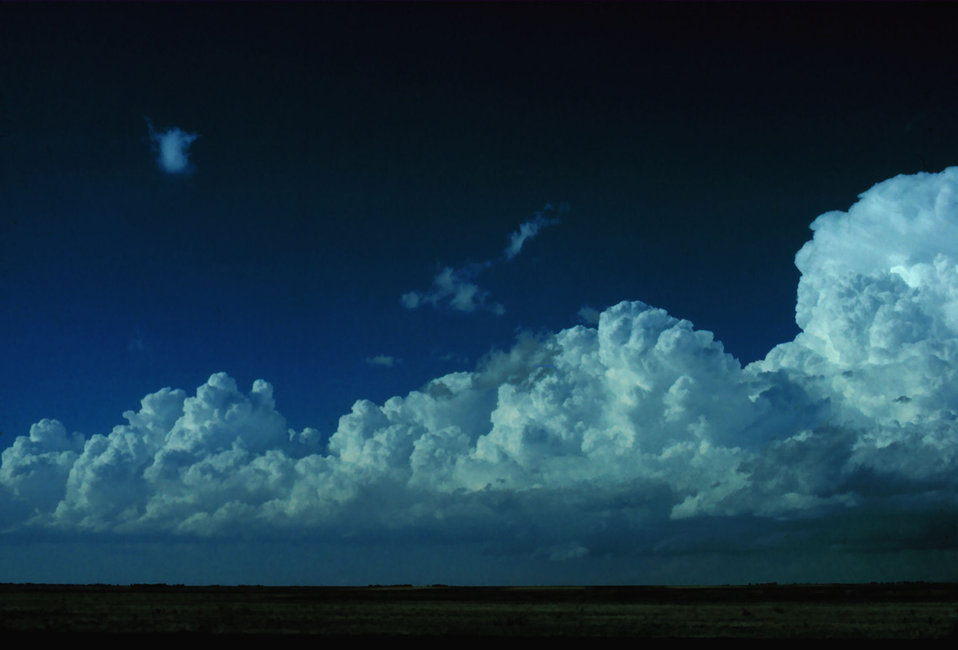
Cumulus congestus